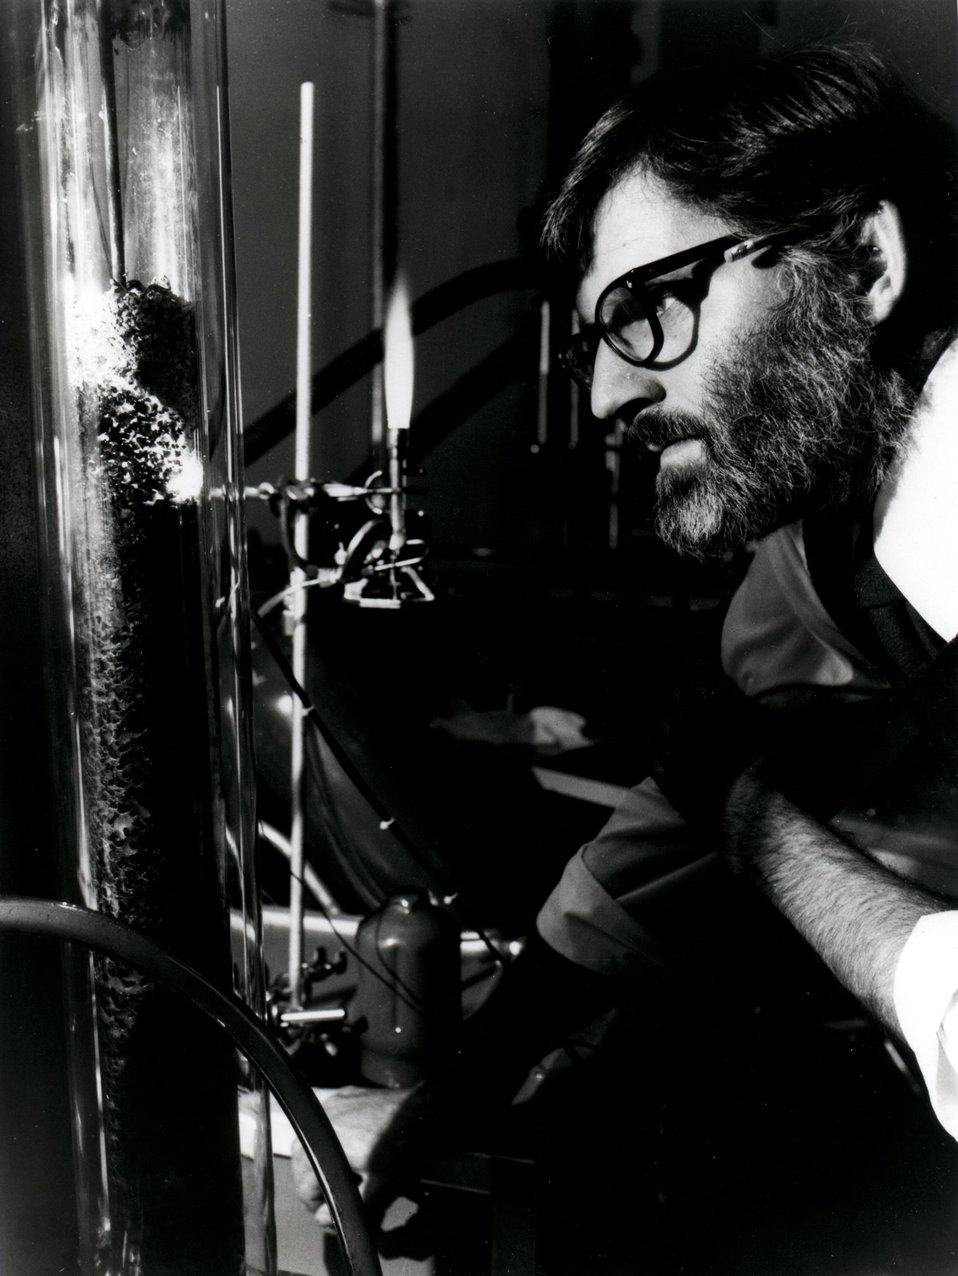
The Lawrence Livermore Laboratory researchers are conducting laboratory experiments to learn how to gasify coal deep underground (500-3000 feet) in the Western States. Circa 1975.